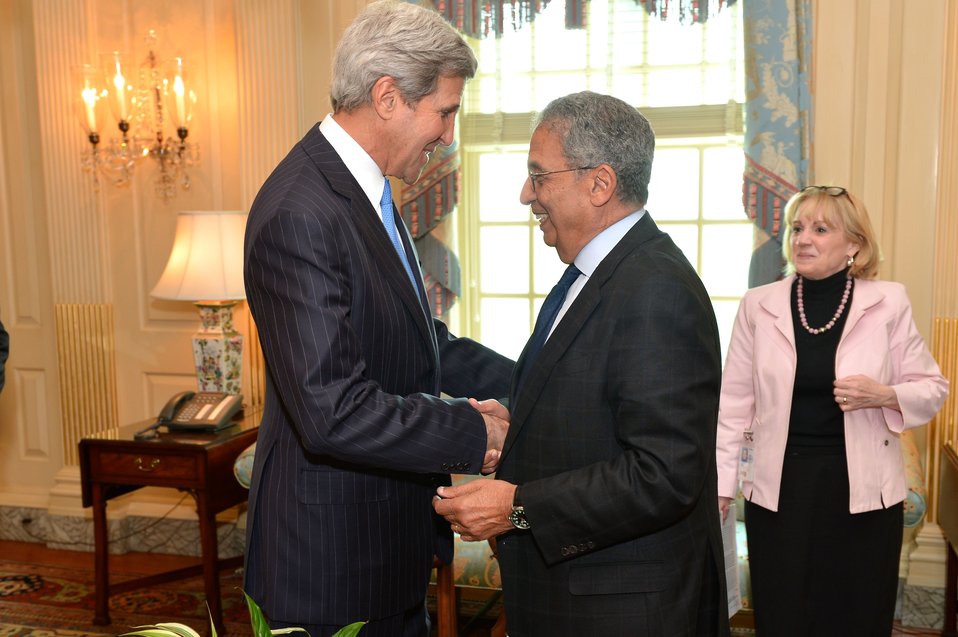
Secretary Kerry Greets Former Arab League Secretary-General Moussa

U.S. Secretary of State John Kerry greets Former Arab League Secretary-General Amre Moussa before their bilateral meeting at the U.S. Department of State in Washington, D.C., on May 8, 2014.